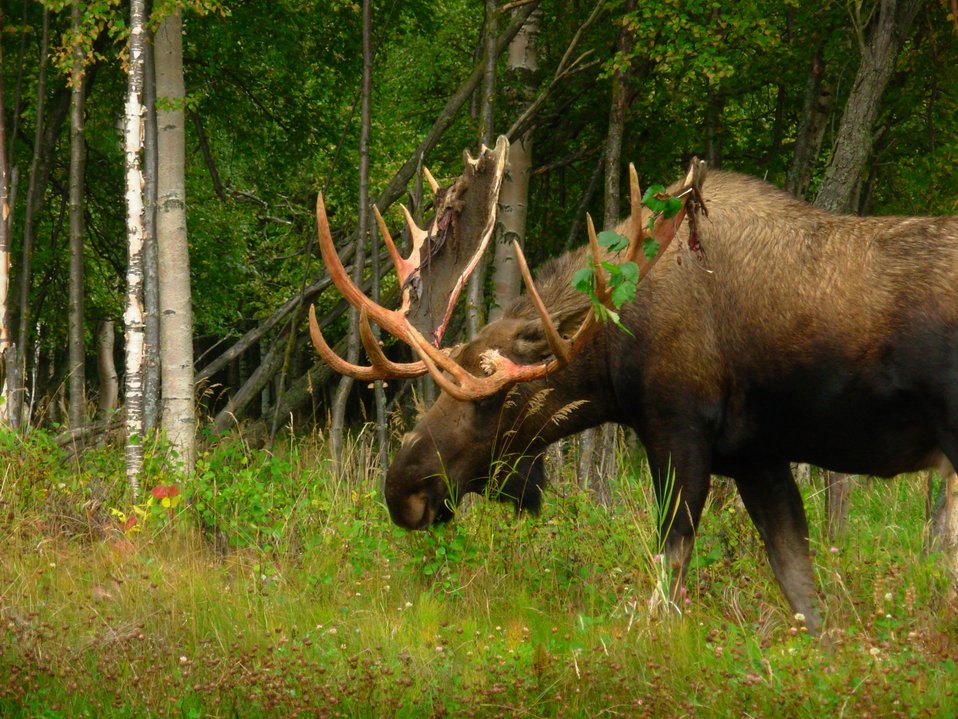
Bull moose still having velvet on antlers. This guy could cause some serious damage.